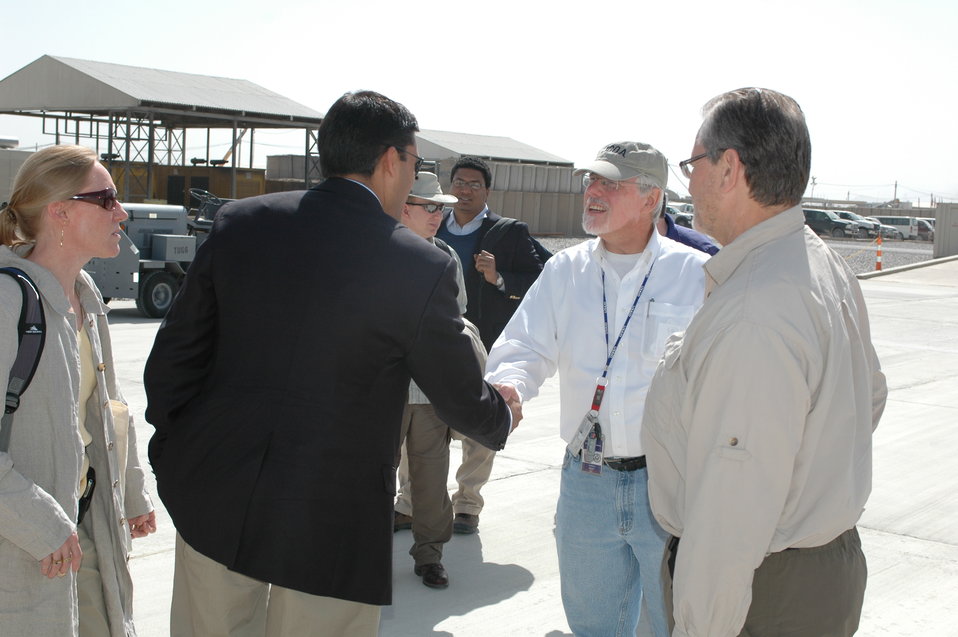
Dr Shah Visits Kandahar April 9, 2010